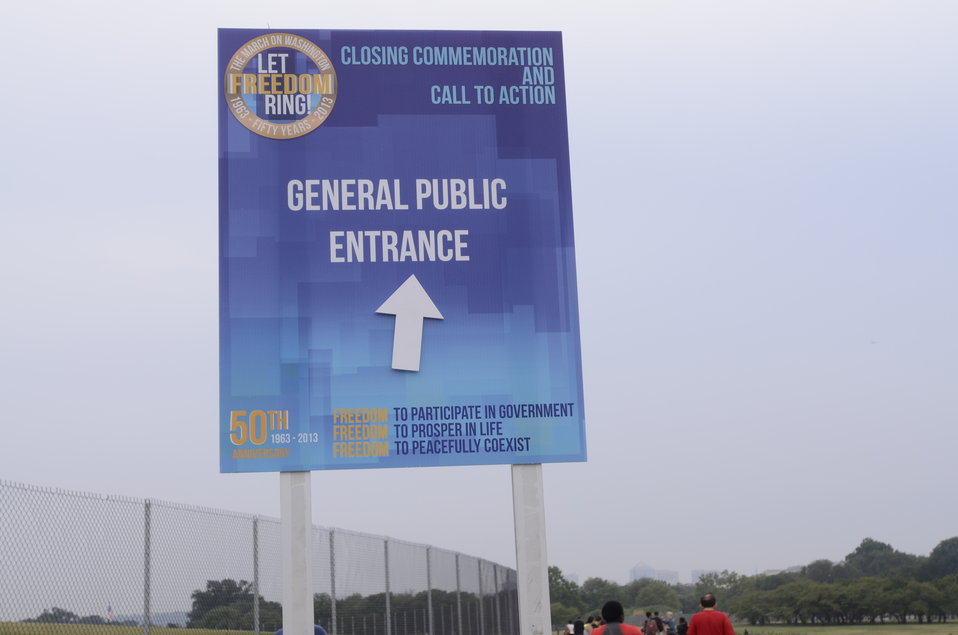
Sign for the entrance for the March on Washington, D.C., on Wed., Aug. 28, 2013.